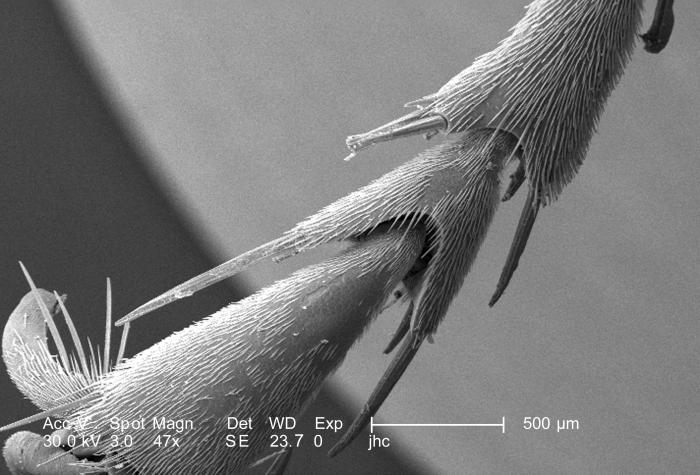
This scanning electron micrograph (SEM) is the first in a series of five PHIL images, 10106, 10107, 10108, 10109, and 10110, depicting the distalmost exoskeletal morphology found on one of the six legs of an unidentified hornet found in the suburbs of Decatur, Georgia. Under a magnification of 47X, what this SEM reveals is the anatomical configuration of what is termed the leg's 'tarsal chain', which comprises the 'tarsus', and 'pretarsus' or 'claw'.The insect leg is usually composed of six segments: the proximal 'coxa', which attaches the leg to the thorax, followed distally by the leg's trochanter, femur, tibia, tarsus, and pretarsus, which in some insects, as is the case of this hornet, is in the form of a 'claw'.